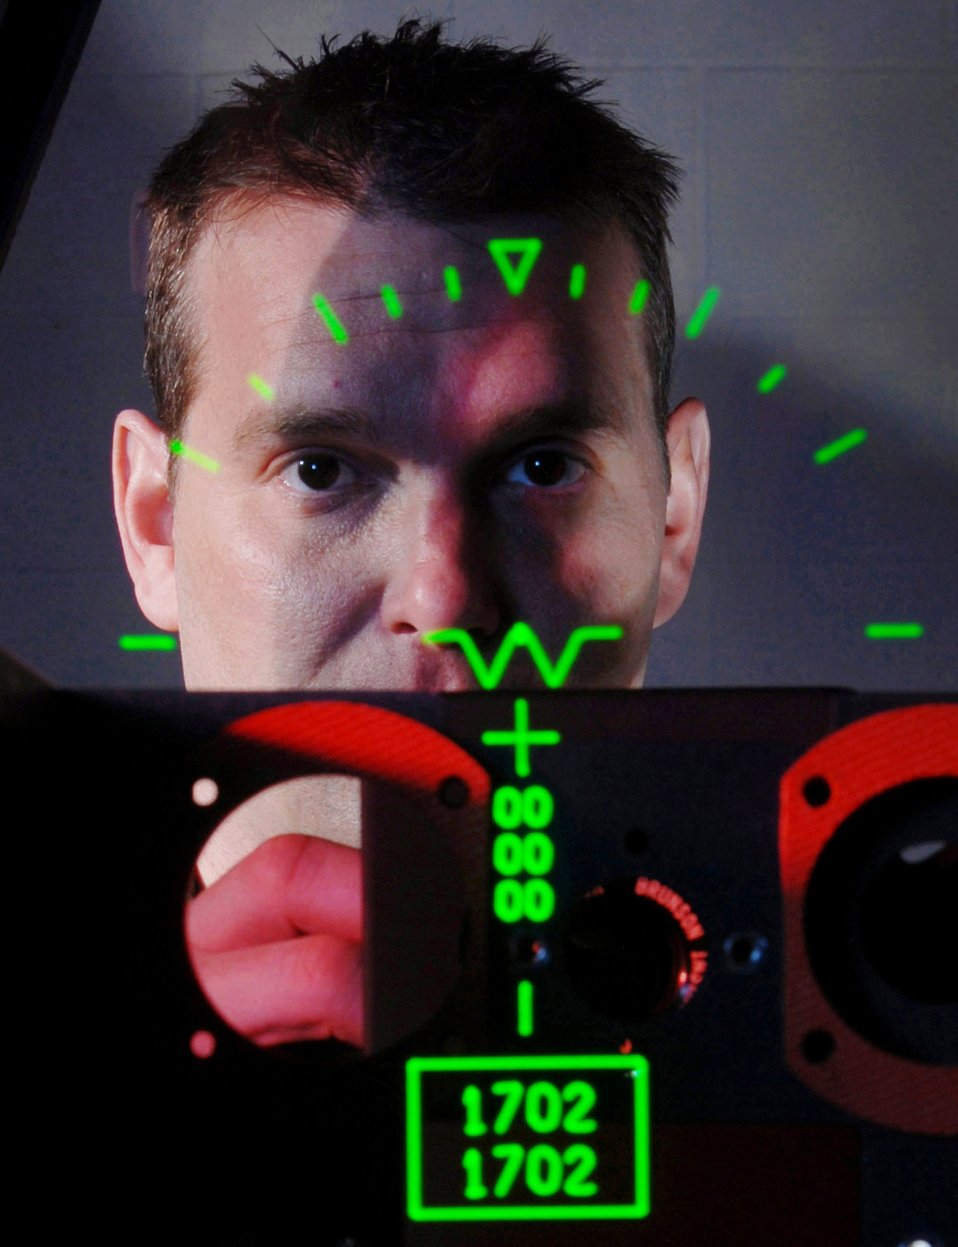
Everything checks

Tech. Sgt. James Erickson checks a head-up display on a C-17 Globemaster III aircraft Feb. 18 at March Air Reserve Base, Calif. Sergeant Erickson, an avionics integrated technician from 452nd Maintenance Squadron, installs, maintains and repairs electronic and electrical systems on all types of aircraft.